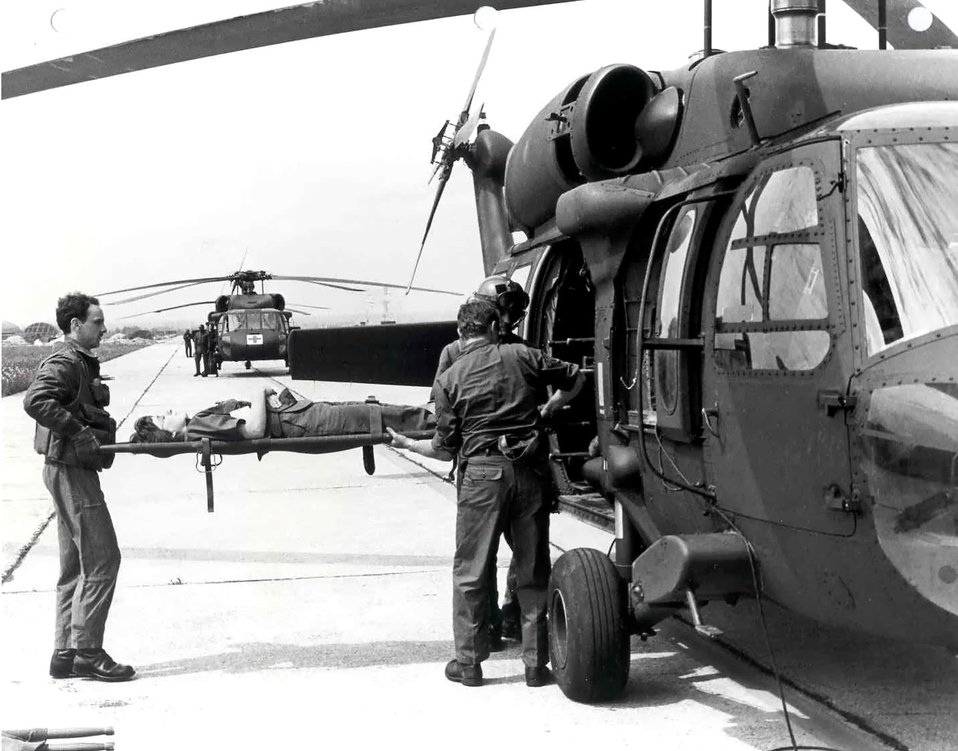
Exercise Lightning Response in 1986

U.S. Army Blackhawk helicopters move